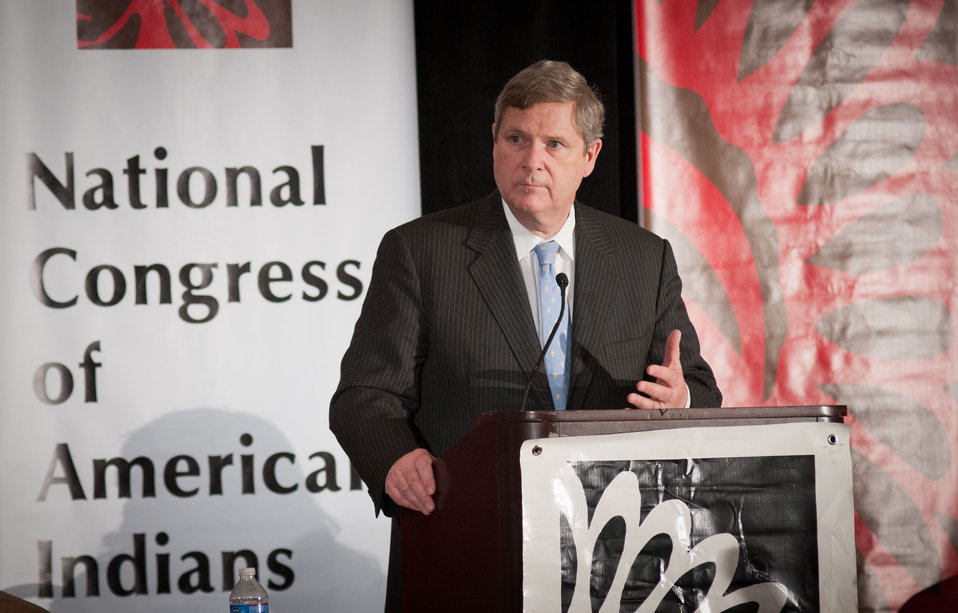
Agriculture Secretary Tom Vilsack today joined tribal leaders from across the nation at the National Congress of American Indians Tribal Nations Legislative Summit in Washington, D. C. on Wednesday March 7, 2012, where he announced investments of $900,000 for positive nutrition education and physical activity habits that can lead to healthier lifestyles. The grants are funded through U.S. Department of Agriculture’s (USDA) Food Distribution Program on Indian Reservations (FDPIR) and will provide nutrition education materials and resources for children and parents in tribal communities in 9 states. USDA chose 17 applicants, located in California, Minnesota, Montana, Oklahoma, South Dakota, Washington, Wisconsin, New Mexico and Alaska to receive FY 2012 funding to develop nutrition education projects that incorporate Dietary Guidelines recommendations within the Native American culture. Secretary Vilsack reiterated USDA’s support to native communities with financial support for electric, broadband and wastewater infrastructure, and provide native families and businesses with home loans and business grants. Secretary Vilsack emphasized USDA’s participation in the First Lady’s Lets Move in Indian Country initiative to combat childhood obesity in tribal communities.